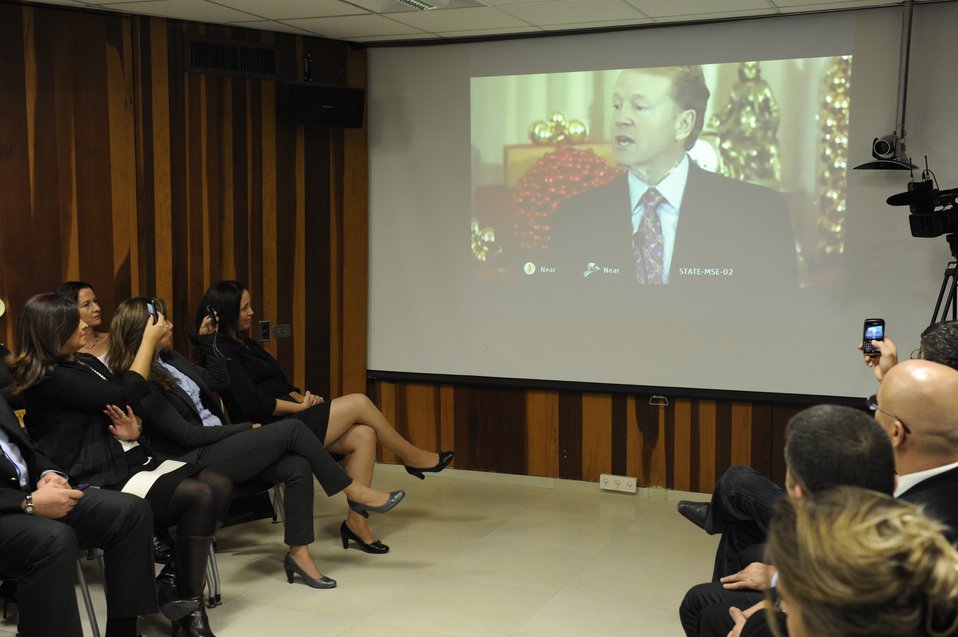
Ambassador Cunningham, Consul General Rubinstein, and CISCO Senior Manager Abzuk Celebrate the ACE Award in Jerusalem

U.S. Ambassador to Israel James Cunningham, U.S. Consul General to Israel Daniel Rubinstein, and Cisco Senior Manager Zika Abzuk, linked via digital video conference with the Secretary of State's Award for Corporate Excellent (ACE) event in Washington, D.C., celebrate the Award at a Jerusalem event in Israel, December 17, 2010.